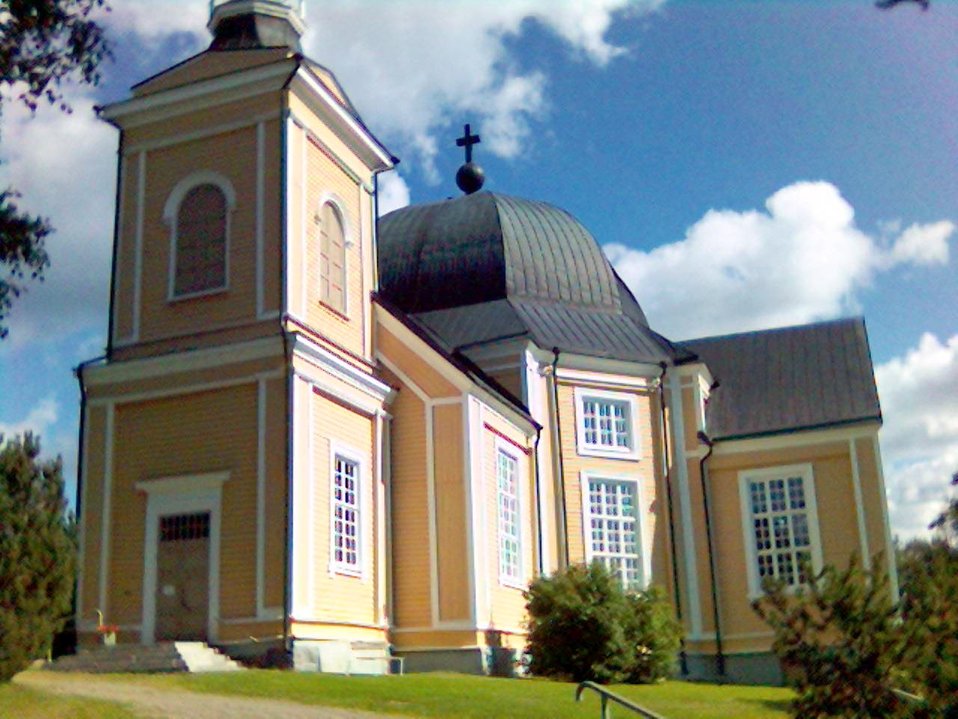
Rääkkylä Church in Rääkkylä, Finland Suomi: Rääkkylän kirkko